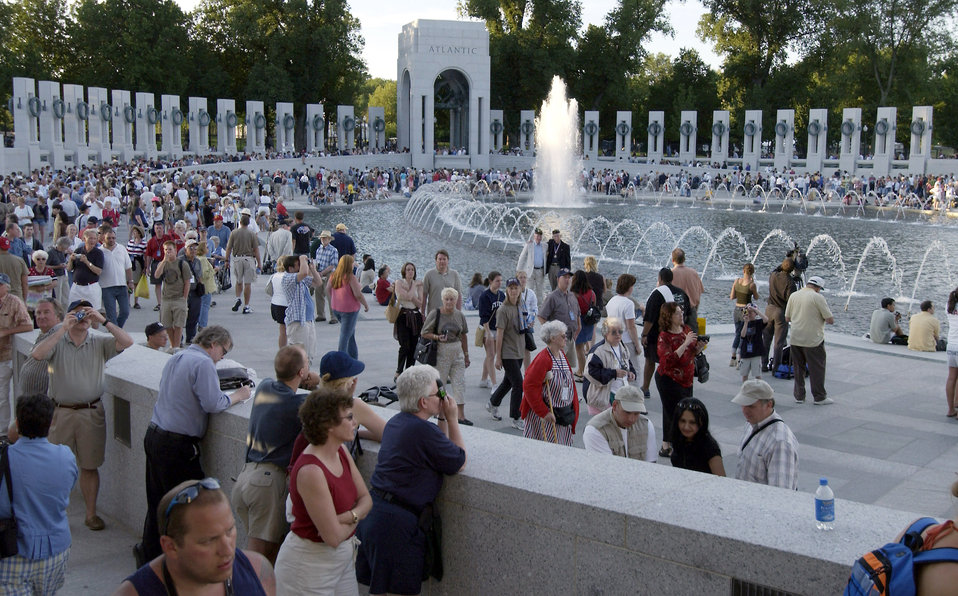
National World War II Memorial dedicated

WASHINGTON -- The largest gathering of World War II veterans since 1945 assembled on the National Mall to witness the dedication of their long-awaited memorial May 29. More than 100,000 people were on hand as President Bush officially accepted the National World War II Memorial on behalf of a grateful nation. The 7.4-acre granite and bronze tribute took 17 years to complete.